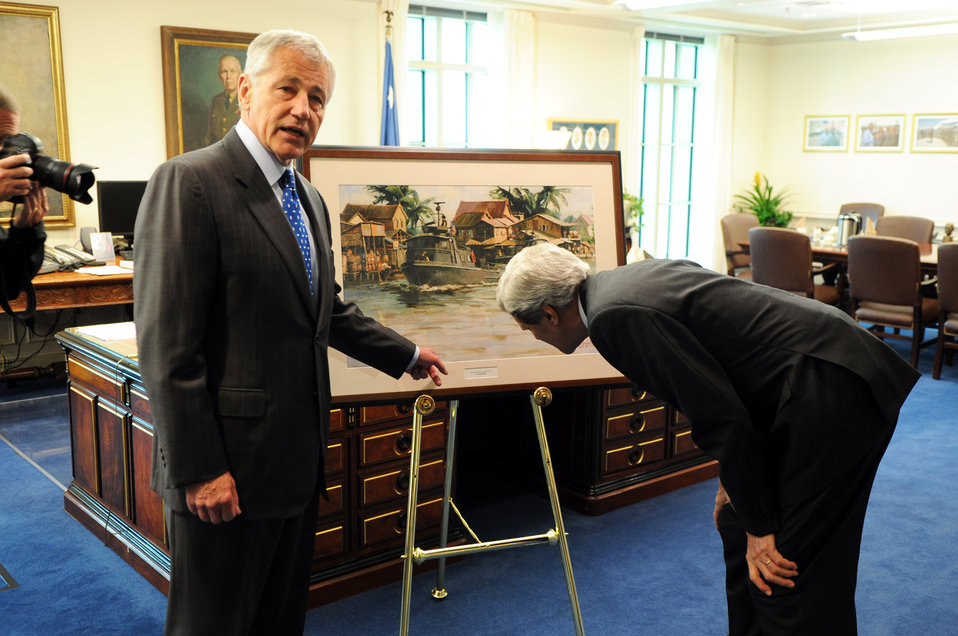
Secretary Kerry Admires a Painting by a Colorado Artist

U.S. Secretary of State John Kerry admires a painting by a Colorado artist that U.S. Secretary of Defense Chuck Hagel presented him before a meeting at the Pentagon in Arlington, Virginia, on May 6, 2013, showing a Swift boat in Vietnam. Secretary Hagel, a fellow Vietnam veteran, found it in the Pentagon art collection and thought of Secretary Kerry, who commanded a Swift boat in Vietnam. It will soon be displayed at the State Department.